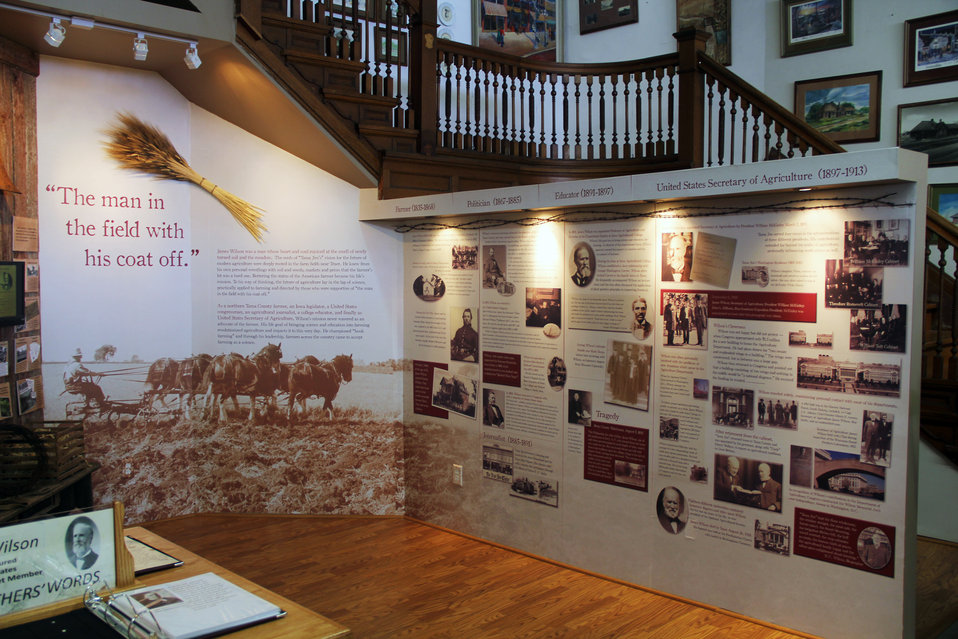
Interior of the museum after the opening ceremony for the Traer Historical Museum exhibit honoring the longest serving cabinet member, former U.S. Agriculture Secretary James 'Tama Jim' Wilson. Wilson was Agriculture Secretary from 1897-1913 under Presidents McKinley, Roosevelt and Taft, at Traer Historical Museum, Traer, Iowa Traer, IA, on Saturday, Jul. 20, 2013.